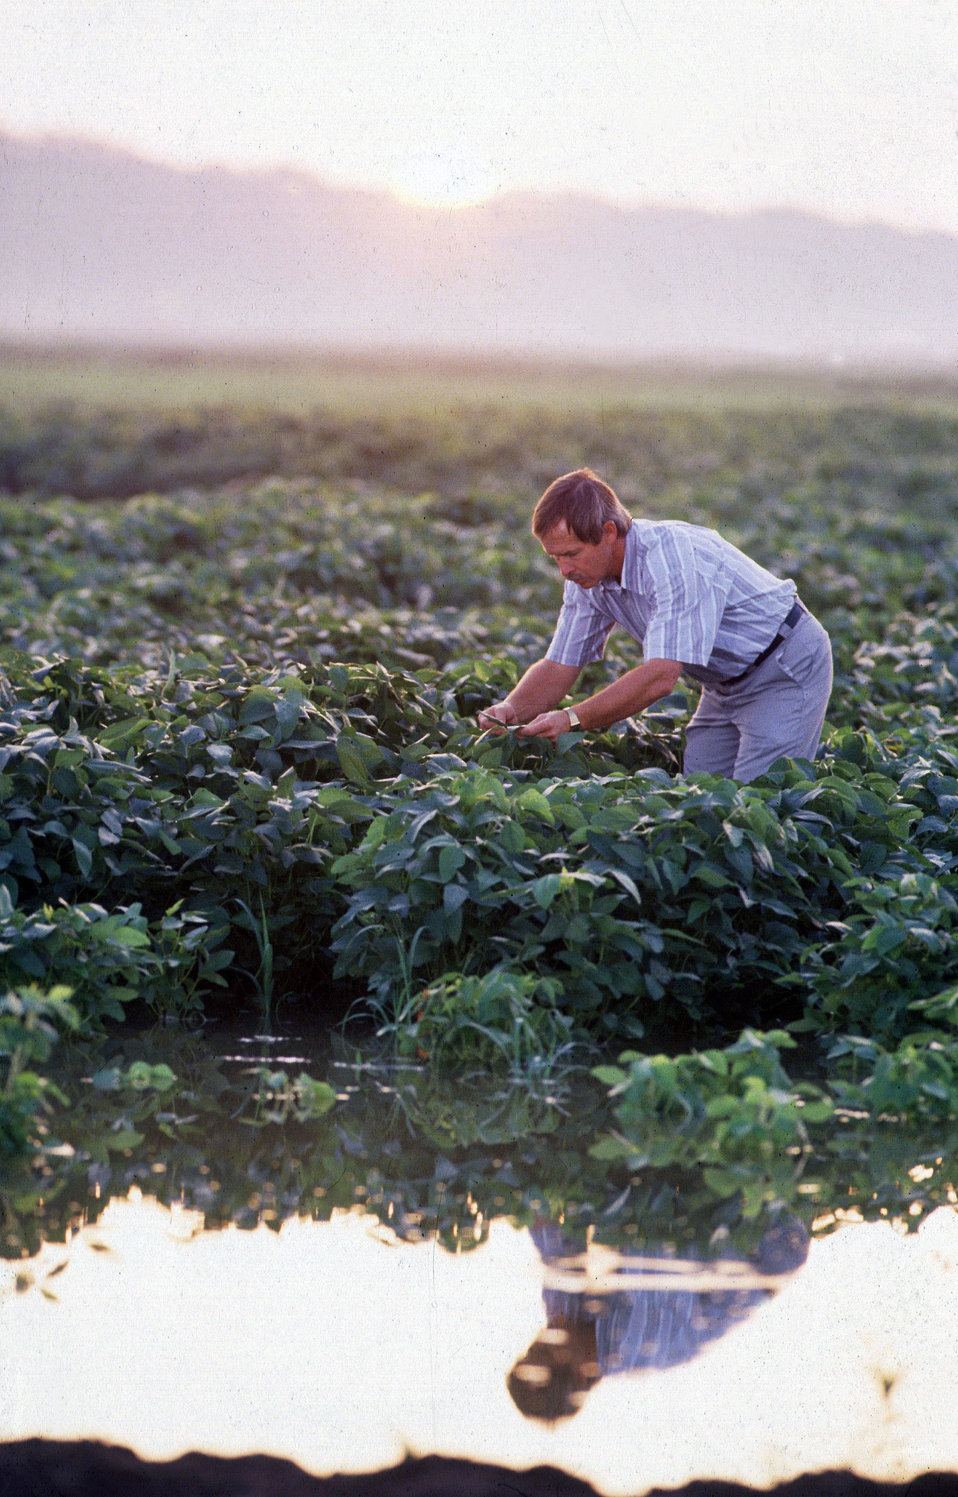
U.S. Department of Agriculture (USDA) Agricultural Research Service (ARS) agronomist Larry Heatherly examines early maturing variety of soybean plants growing in a flood-irrigated field in Mississippi.